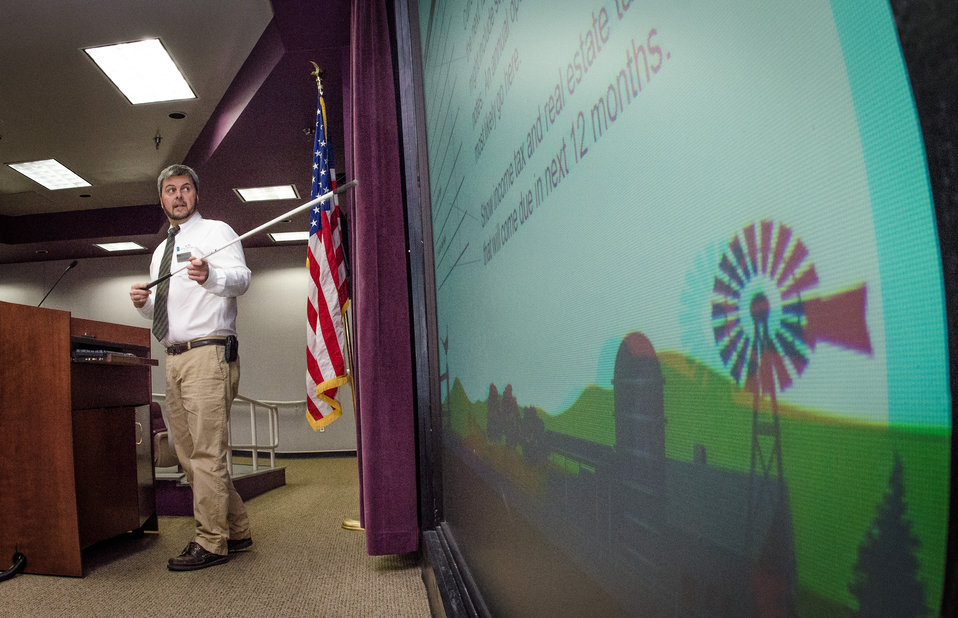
U.S. Department of Agriculture (USDA) Farm Service Agency Farm Loan Programs Chief Pete Adamson spoke with farmers participating in the “Virginia State University (VSU), USDA and Virginia Farmers Working Together” outreach workshop in the VSU, L. Douglas Wilder building on Thursday, March 7, 2013, in Petersburg, VA. Farmers shared and learned new ways to do more with USDA services, and how to apply for programs that will help grow their business.